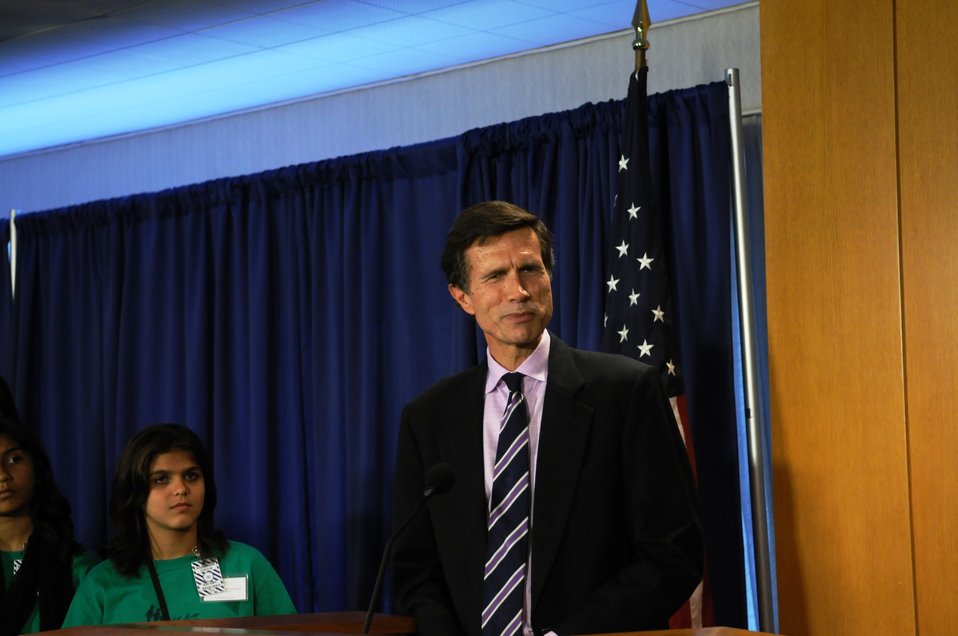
Assistant Secretary Blake Delivers the Opening Remarks

U.S. Assistant Secretary of State for South and Central Asian Affairs delivers the opening remarks at the Seeds of Peace reception at the U.S. Department of State in Washington, D.C., on July 14, 2010.